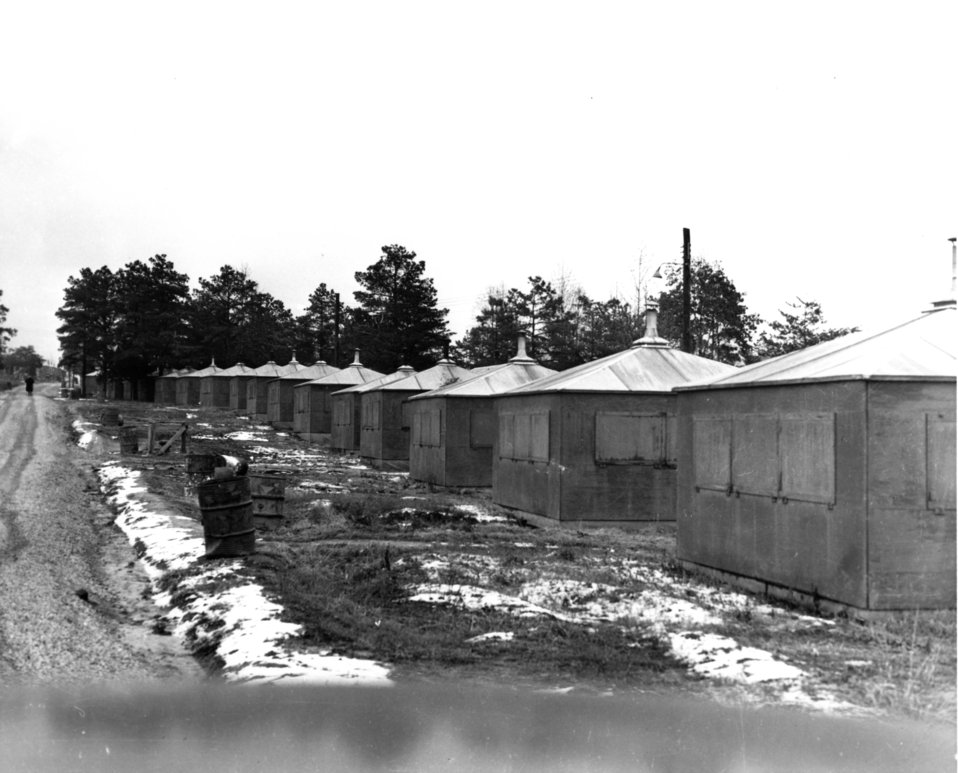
Housing at Oak Ridge